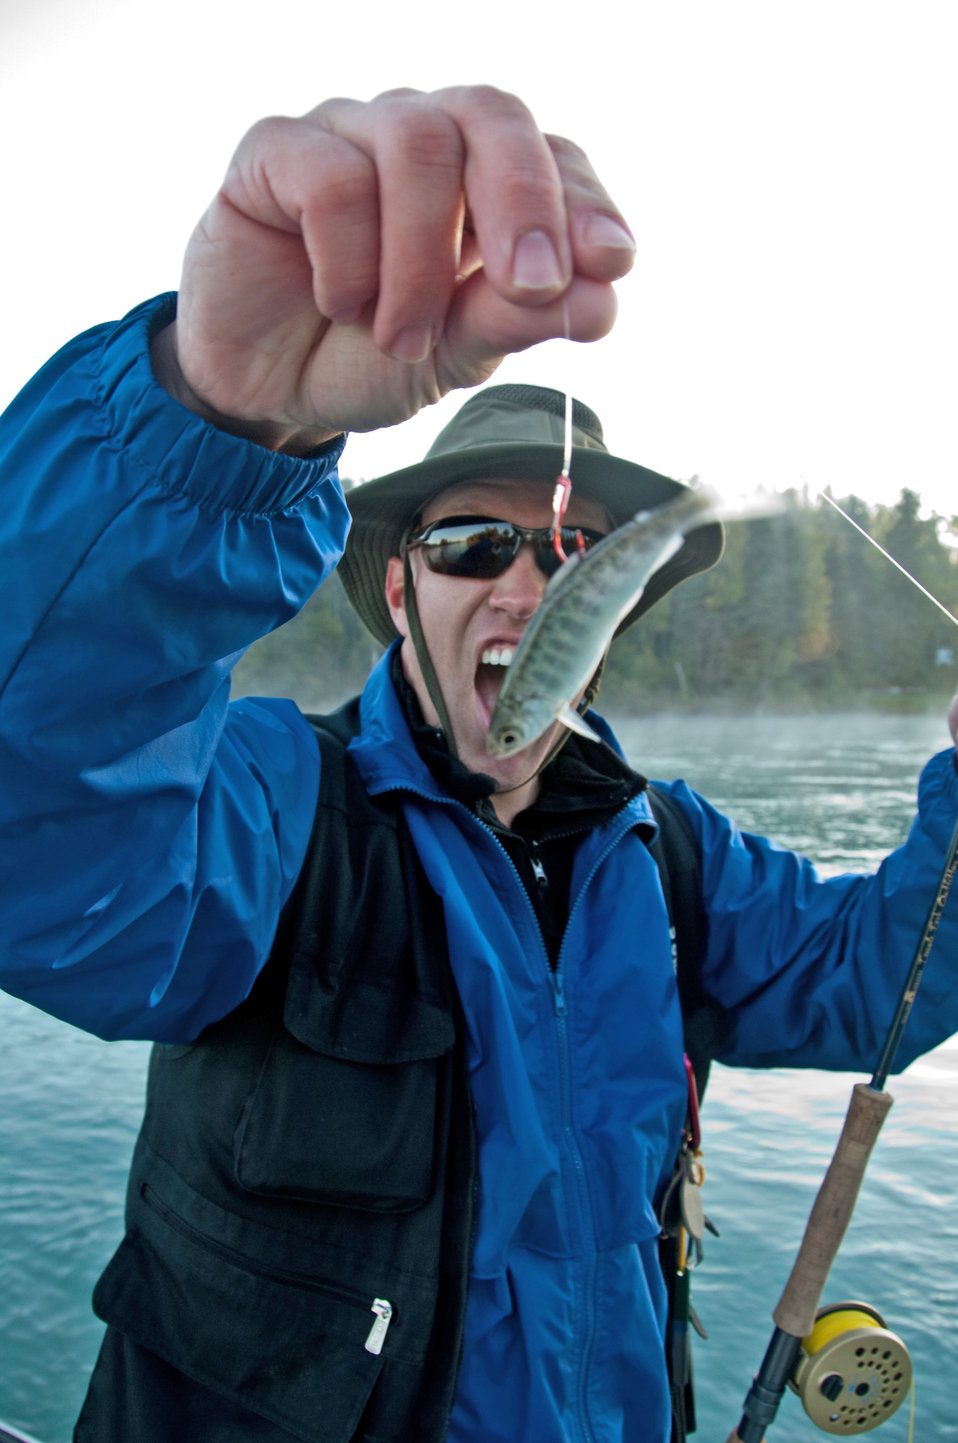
Alaska's Healing Waters

Staff Sgt. Mike Henrie, marvels at the size of his catch Sept. 11, 2010, on the Kenai River, Alaska. Sergeant Henrie is the Project Healing Waters Alaska program director